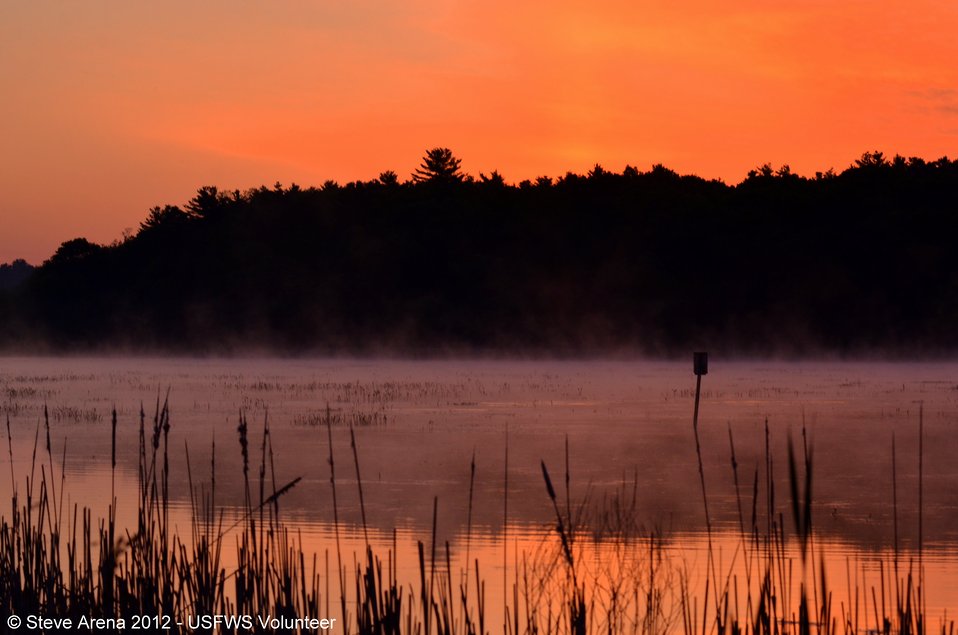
Photo of the Week - Sunrise Great Meadows National Wildlife Refuge (MA)

Photo of the Week - 10/1/12

Sunrise at Great Meadows National Wildlife Refuge, Concord, MA.